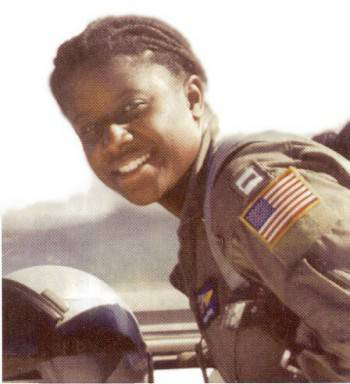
Lt. Col. Merryl Tendgesdal

Lt. Col. Merryl Tengesdal: The first African-American female U-2 pilot